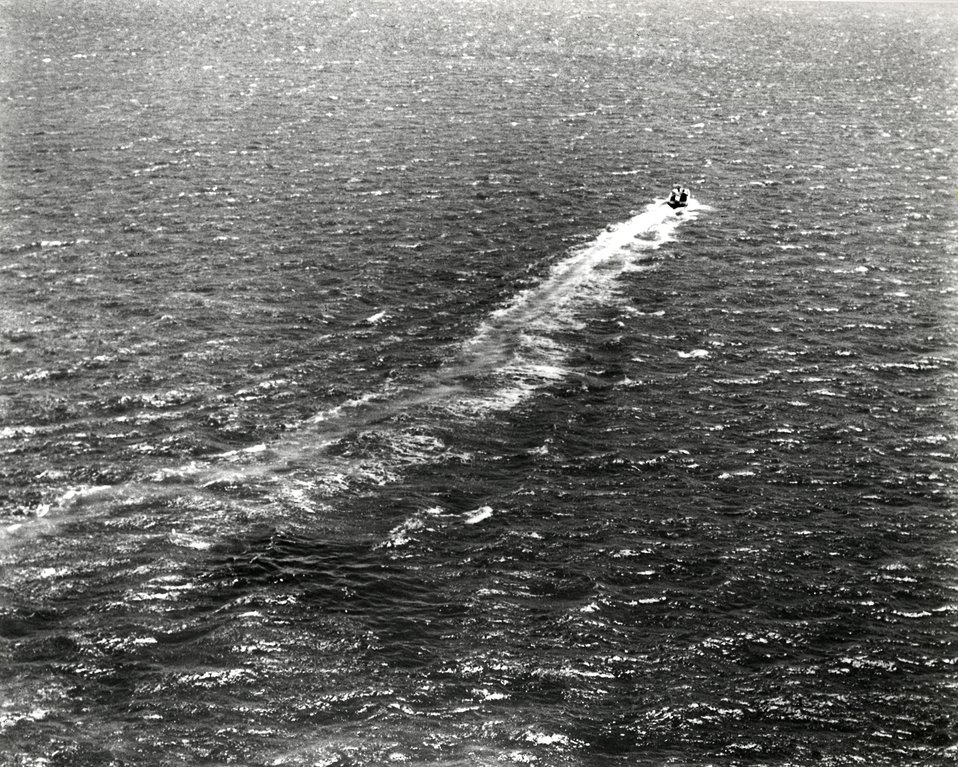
Using a dye-release technique in the Bay of Jobos in southern Puerto Rico, scientists at Puerto Rico Nuclear Center are able to compile valuable data concerning the behavior of water currents in the Bay area.
c.1972